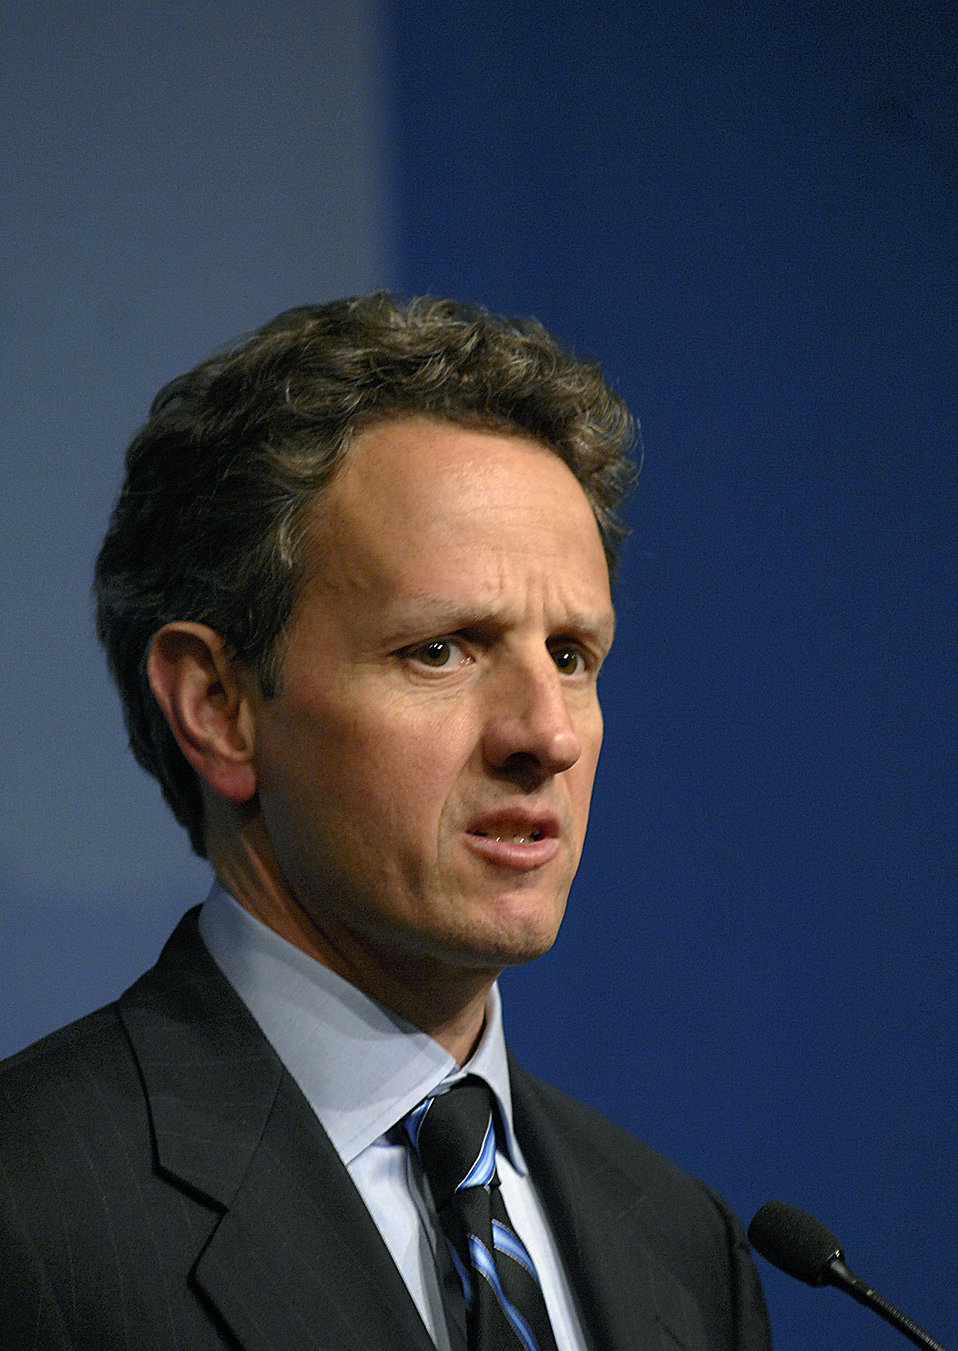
G-20 Press Conference, 4/23/10

On April 23, 2010, Secretary Geithner held a press conference at the conclusion of the G-20 Meeting of Finance Ministers at the IMF.